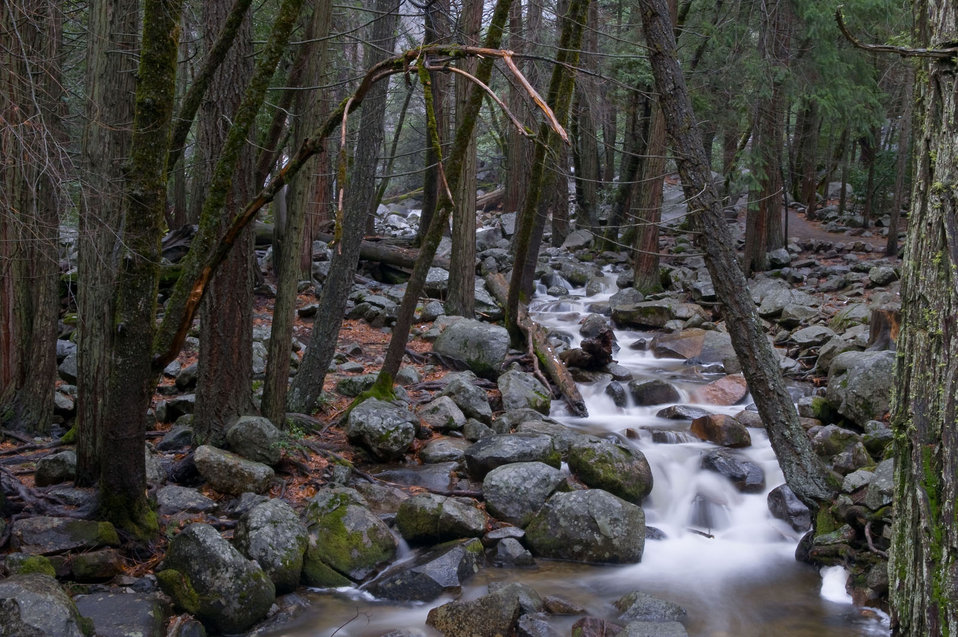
Streams and Wetlands are Vital to Health of our Waterways

The health of our nation’s rivers, lakes, bays and coastal waters depends on the vast network of streams and wetlands where they begin.

About 60 percent of stream miles in the continental U.S only flow seasonally or after rain. Approximately 20 percent of the wetlands (20 million acres) in the continental U.S. are not visibly connected to other waterways but have critical groundwater connections and provide many other benefits.

These streams and wetlands feed downstream waters, trap floodwaters, recharge groundwater supplies, remove pollution, and provide fish and wildlife habitat. Streams and wetlands are also economic drivers because of their key role in fishing, hunting, agriculture and recreation.

So these streams and wetlands form the very foundation of our nation’s water resources and are absolutely vital to the health of waterways and communities that are downstream.

Because they are often small, unnamed, not on maps and not always wet, these streams and wetlands are very vulnerable. With each mile of stream and acre of wetland destroyed, we are losing critical resources that we depend on.